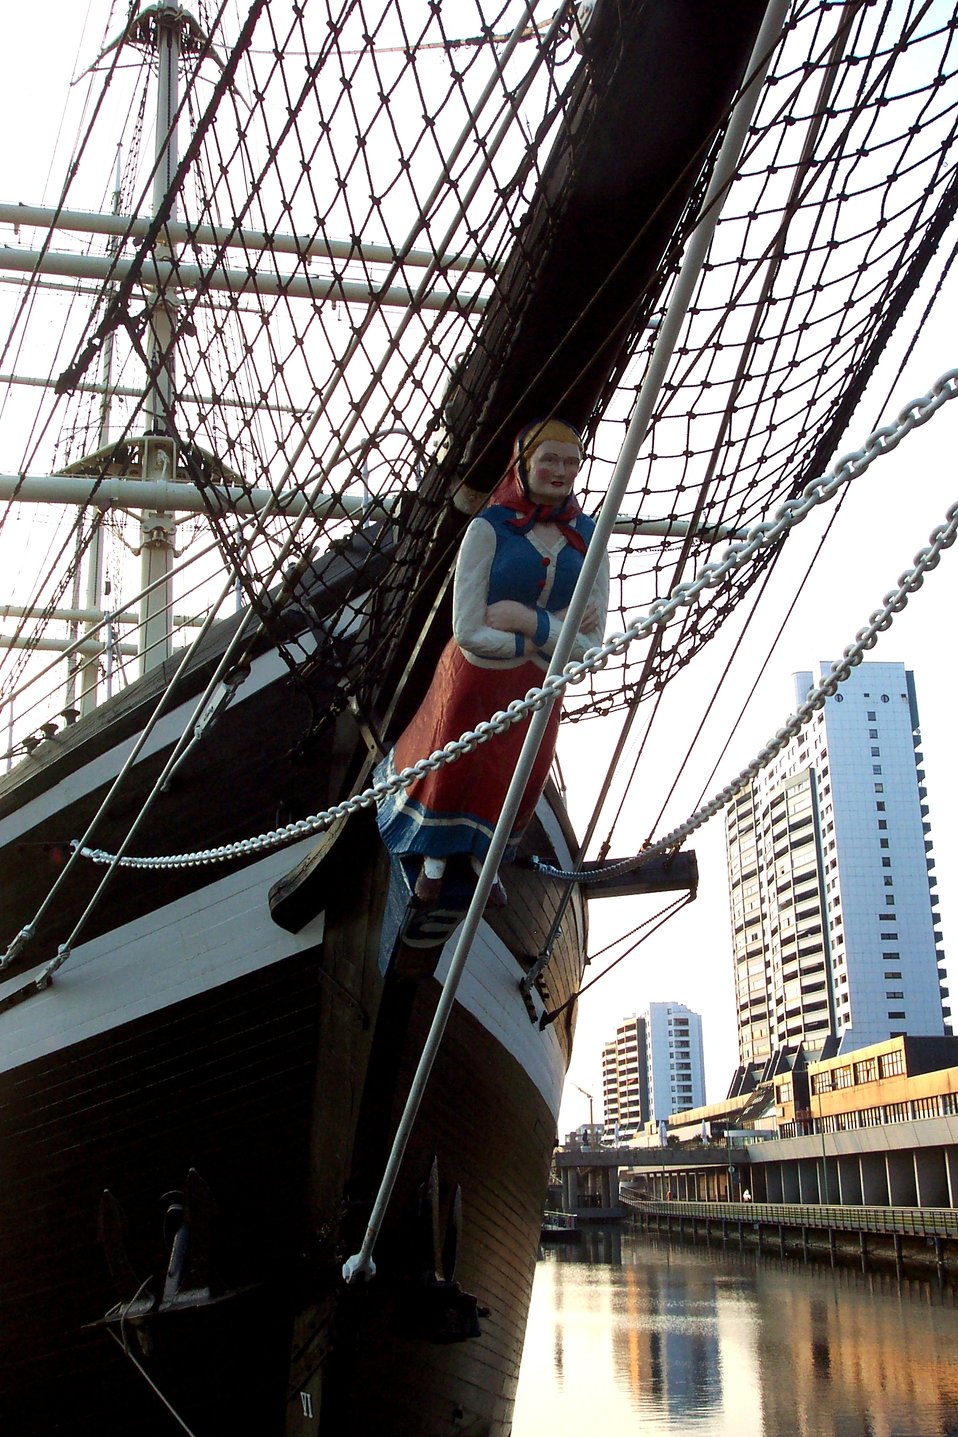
Figurehead of a sailing ship at the Bremerhaven Maritime Museum.